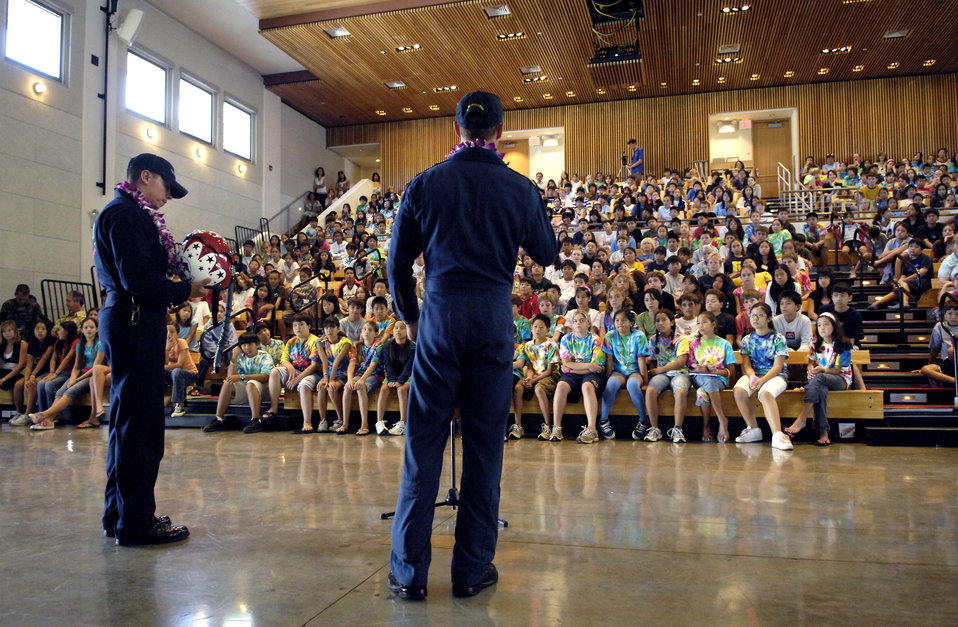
Thunderbirds visit school children during Air Force Week Honolulu

Tech. Sgt. Mario Munguia and Maj. Tad Clark talk about equipment they use as members of the Air Force Deomonstation Team, the Thunderbirds, to middle school children Sept. 14 at the Punahou School in Honolulu. The Thunderbirds made a community appearance at a school in Oahu as part of Air Force Week Honolulu.